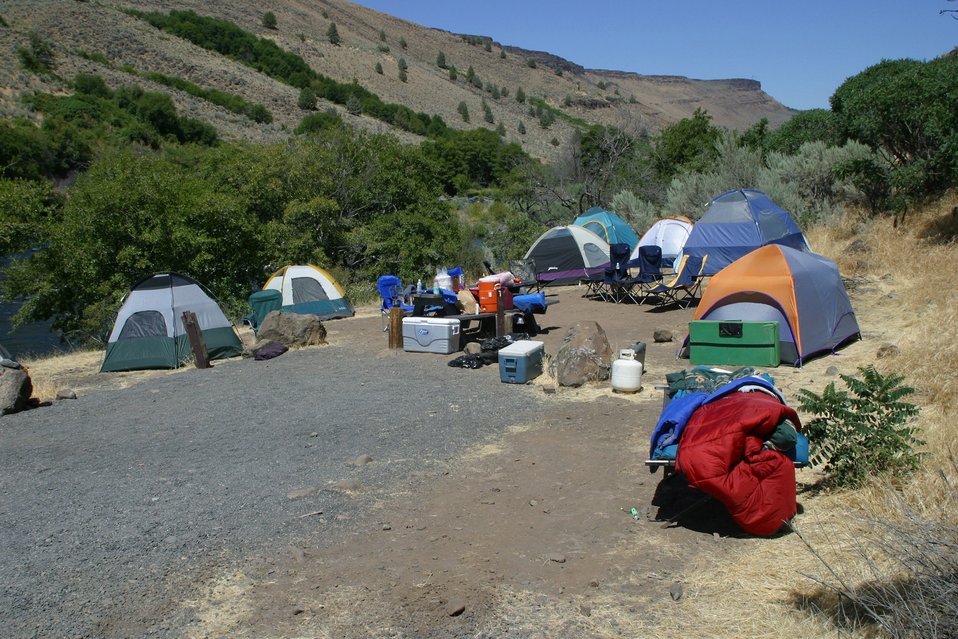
Oasis Campground along the Lower Deschutes River.